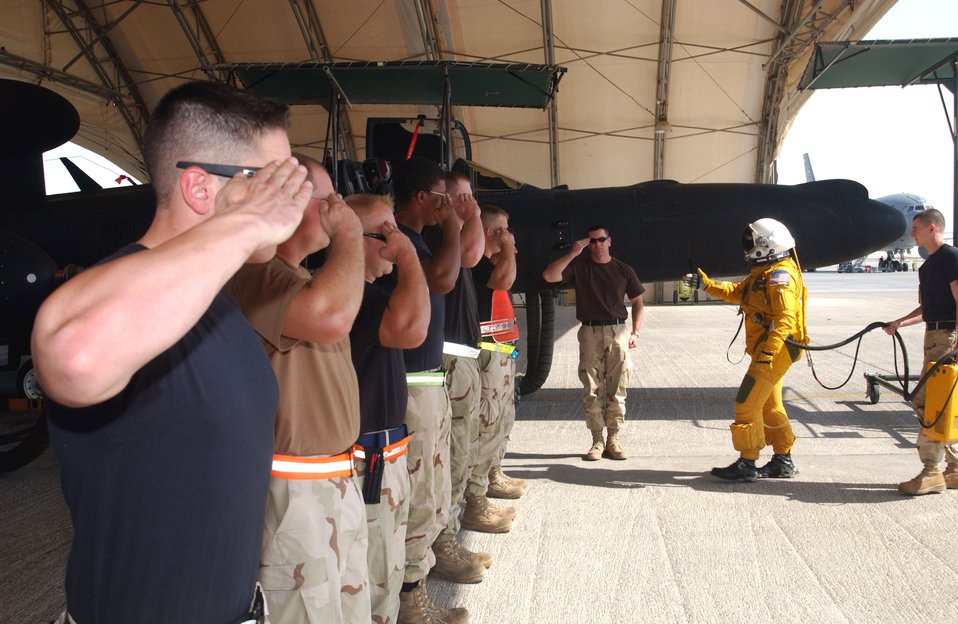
Flying high

Airmen from the 380th Expeditionary Aircraft Maintenance Squadron salute Capt. Karl Frederick as he walks toward his U-2 Dragonlady Oct. 24. The salute is a preflight tradition before a launch. Captain Frederick and Airmen from the 380th EAMXS are part of the vital intelligence, surveillance and reconnaissance mission for Operations Enduring Freedom and Iraqi Freedom in Southwest Asia.